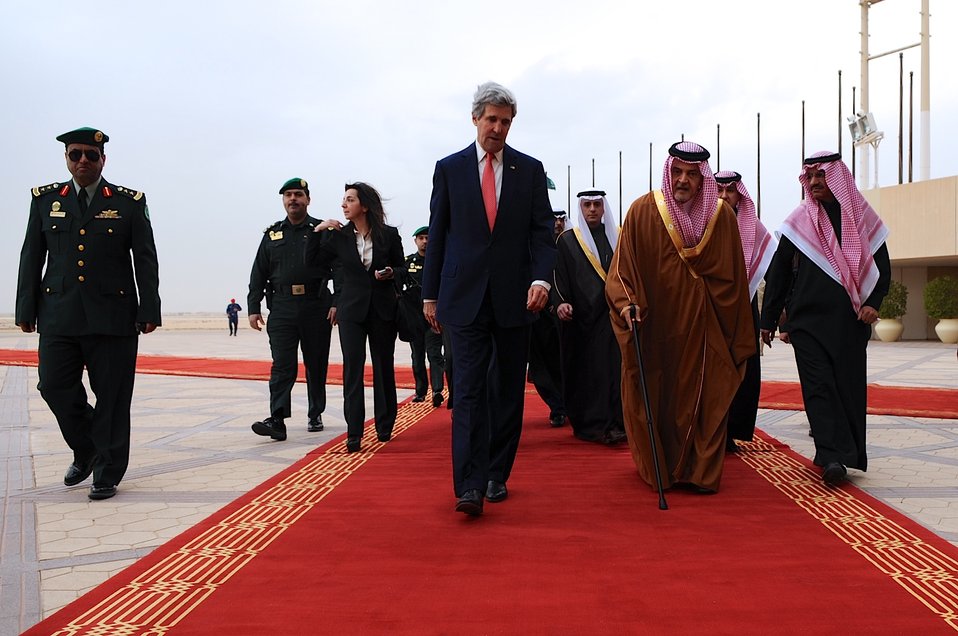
Secretary Kerry Walks With Saudi Foreign Minister al-Faisal in Riyadh

U.S. Secretary of State John Kerry walks with Foreign Minister Crown Prince Saud al-Faisal of Saudi Arabia upon his arrival in Riyadh on January 5, 2014.